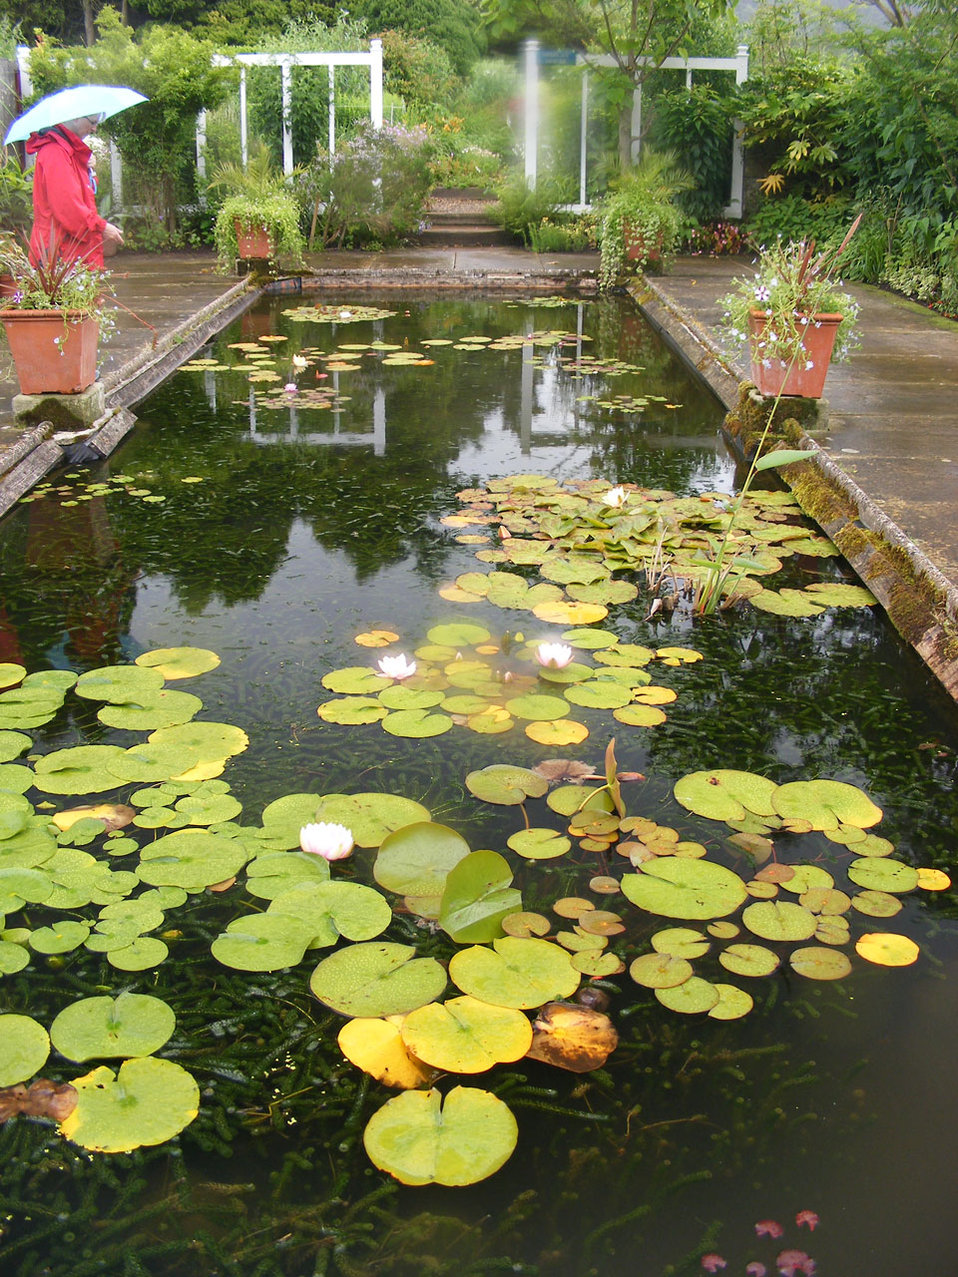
Formal pond

A formal pond.